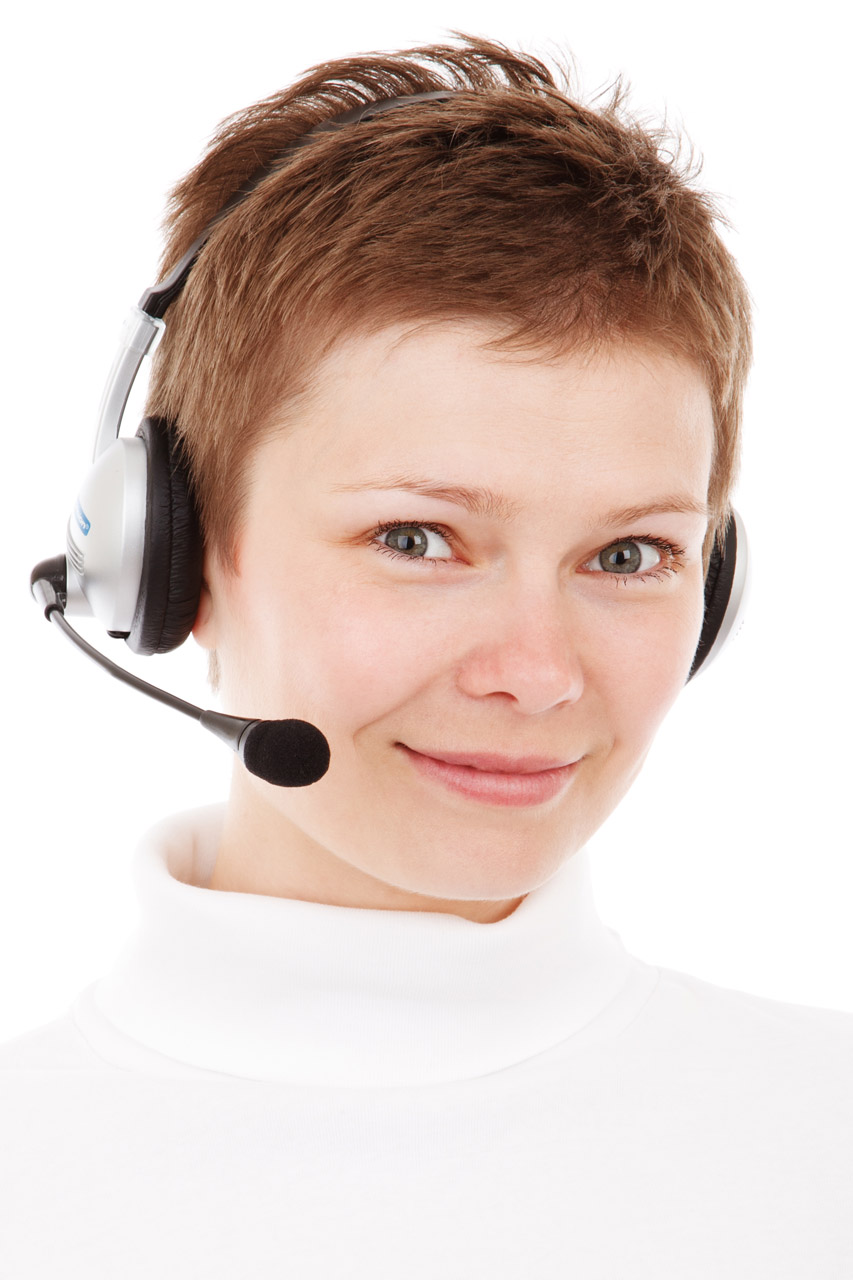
Woman with phone headset

Young woman with phone headset isolated on white background - jana svojsova.